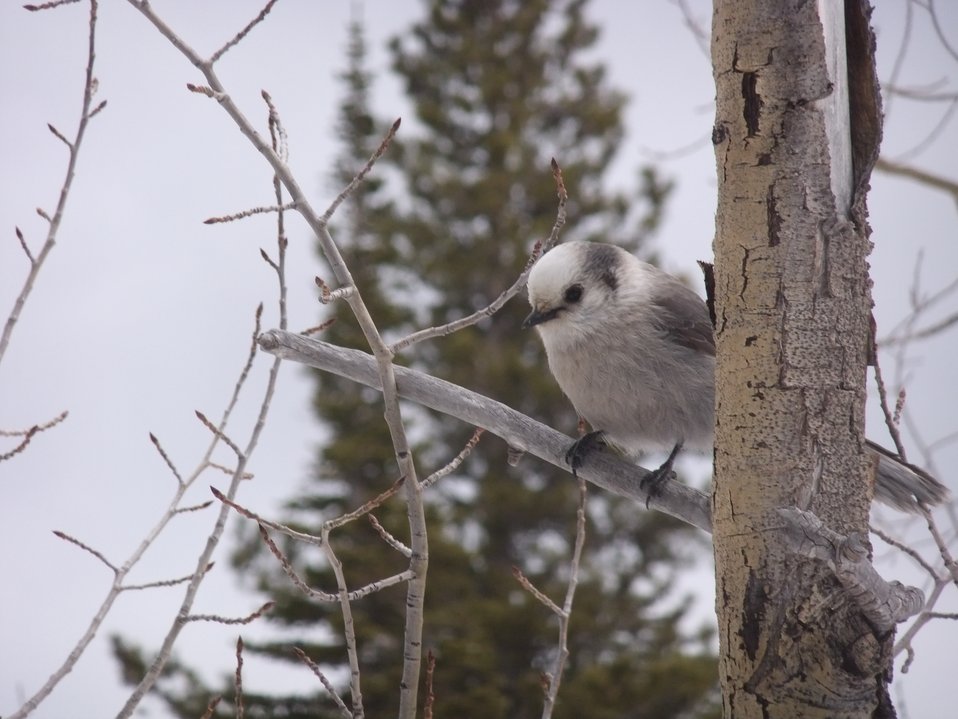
Gray Jay

This curious gray jay landed in a tree right above me as I was about to enjoy my lunch while hiking one afternoon in the mountains.

Location: Rocky Mountain National Park

Credit: Amanda Horvath / USFWS

Photo Contest Entry #180